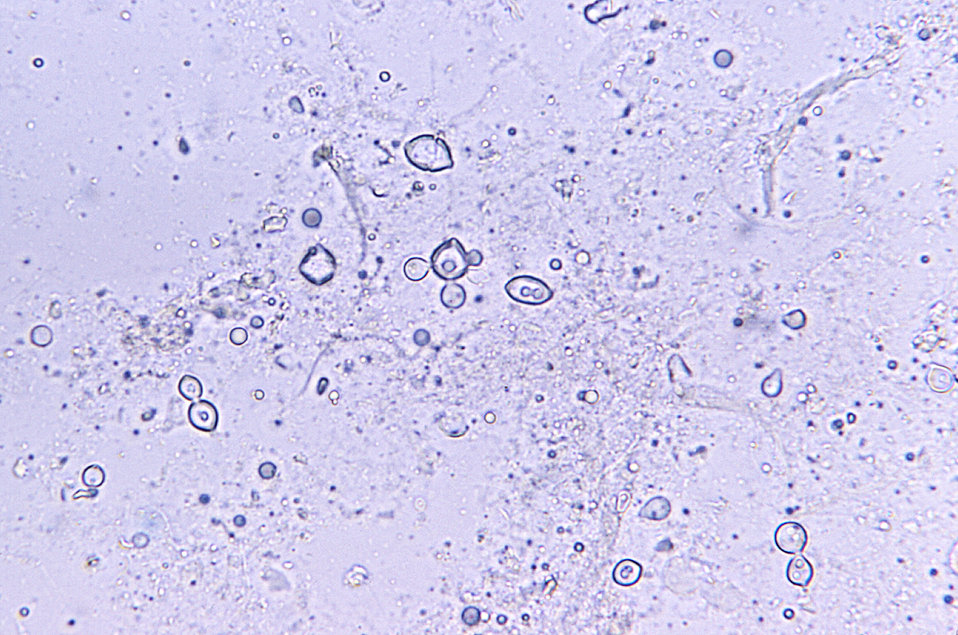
Under a magnification of 500X, this photomicrograph of a Florida dolphin wet-mount tissue sample, revealed some of the histopathologic cytoarchitectural changes associated with what was determined to be a case of lobomycosis due to the fungus, Lacazia loboi, formerly Loboa loboi. Usually, lobomycosis is seen in humans and dolphins.